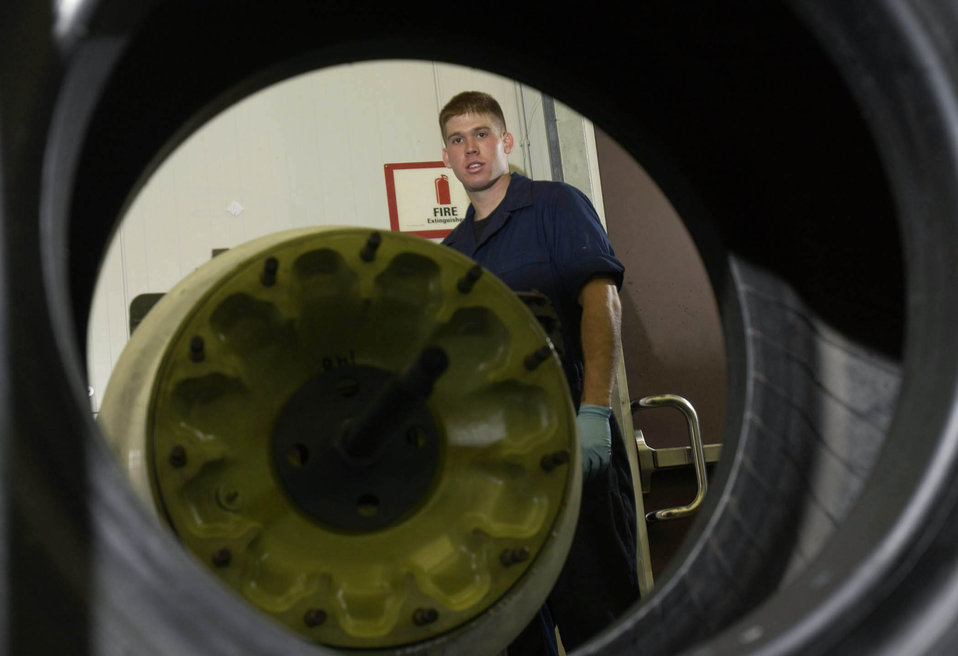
Feeling tired?

RAMSTEIN AIR BASE, Germany -- Airman 1st Class Vincent Citrullo lines up a C-130 Hercules wheel half with the tire on a wheel assembly machine at the 86th Maintenance Squadron's wheel and tire centralized intermediate repair facility here. Airman Citrullo is serving a temporary duty here and is from the 355th Aircraft Maintenance Squadron at Davis-Monthan Air Force Base, Ariz.